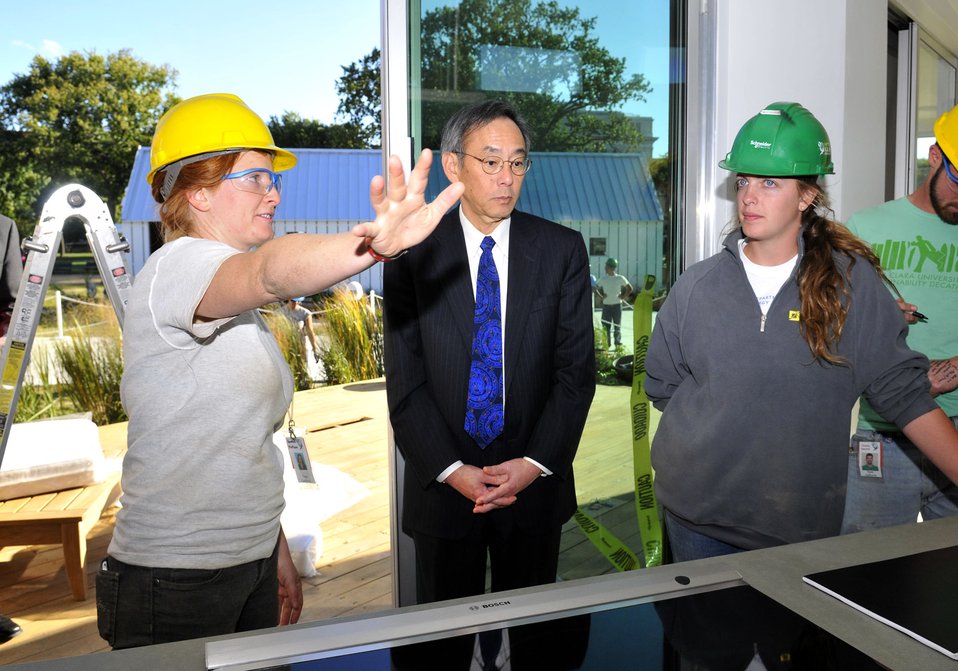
Solar Decathlon 2009 on the National Mall, with Sec. Chu

Solar Decathlon 09